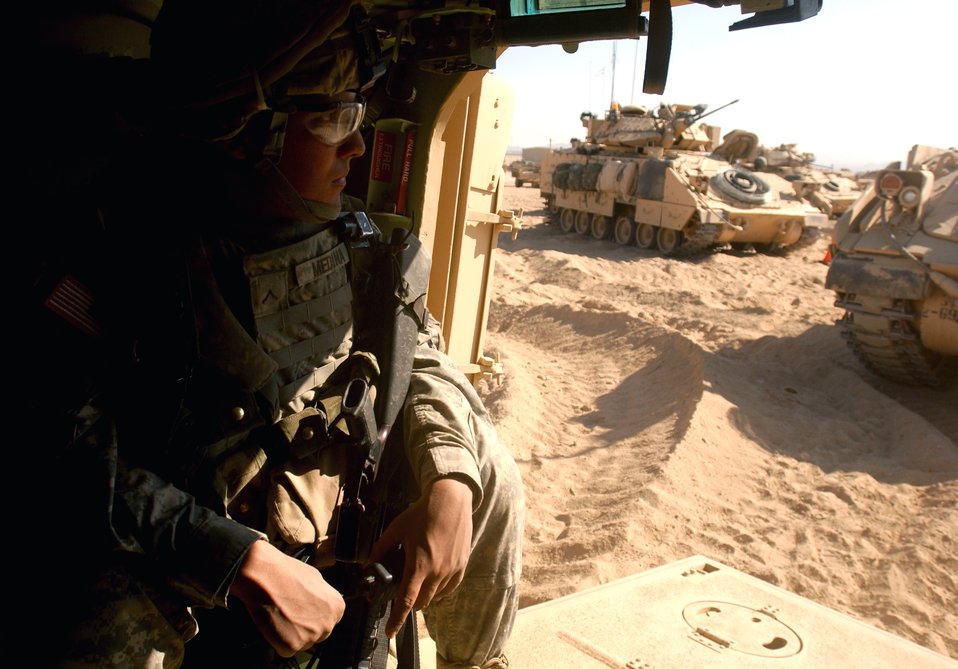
Airmen, Soldiers prepare for Iraq

A Soldier takes part in a route clearance training scenario Jan. 22 at the National Training Center at Fort Irwin, Calif. Soldiers and Airmen are trained in a number of different scenarios that will help better prepare themselves for Iraq. The Soldier is member of Echo Company, 2-69 Armor Battalion from Fort Benning, Ga.